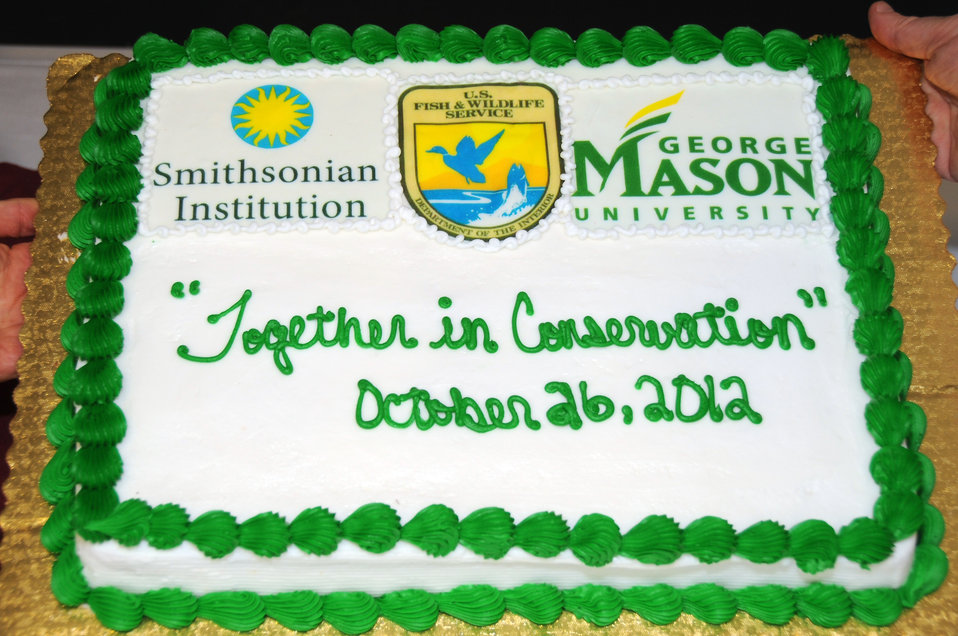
Together in Conservation

Memorandum of Understanding Signing Ceremony with U.S. Fish and Wildlife Service, Smithsonian Institution, and George Mason University. October 26, 2012